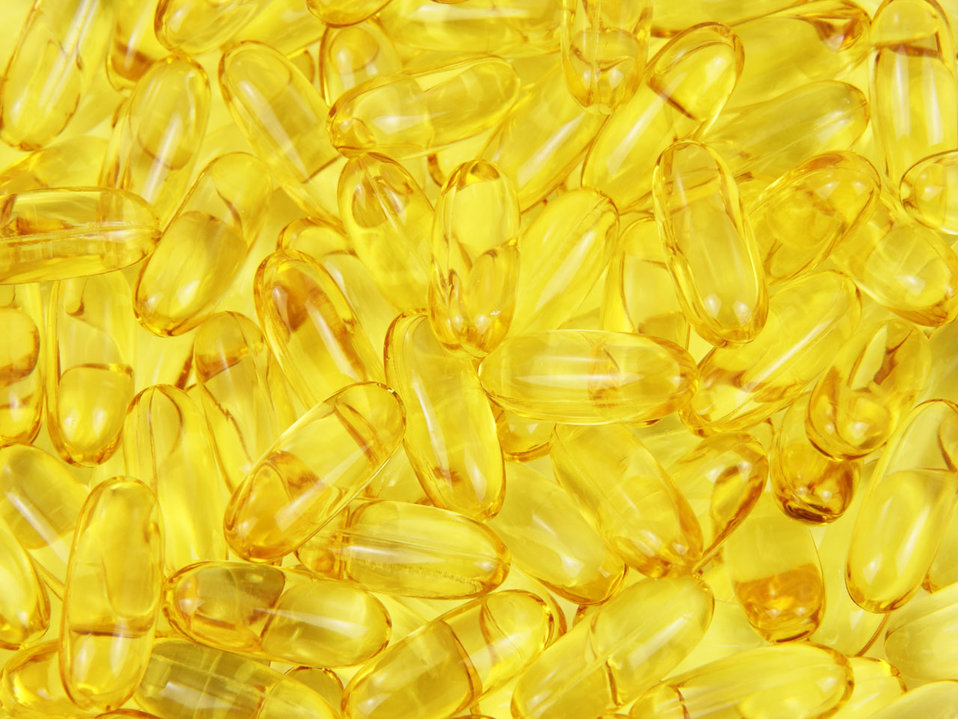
Fish oil background

Background image from fish oil tablets.